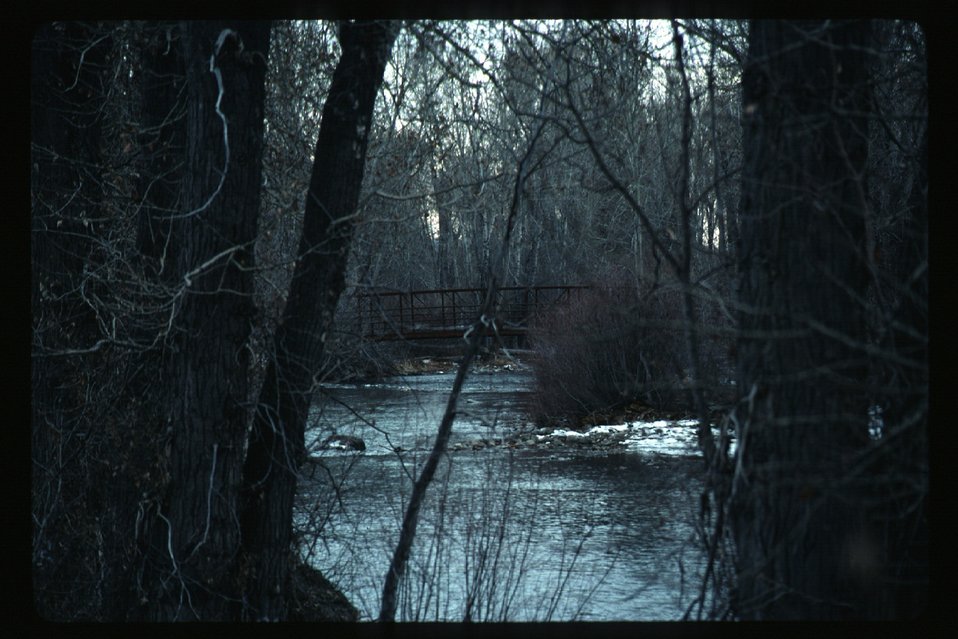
Wood River Rechanneling Recreation and Riparian Shoshone Field Office USRD Upper Snake River District